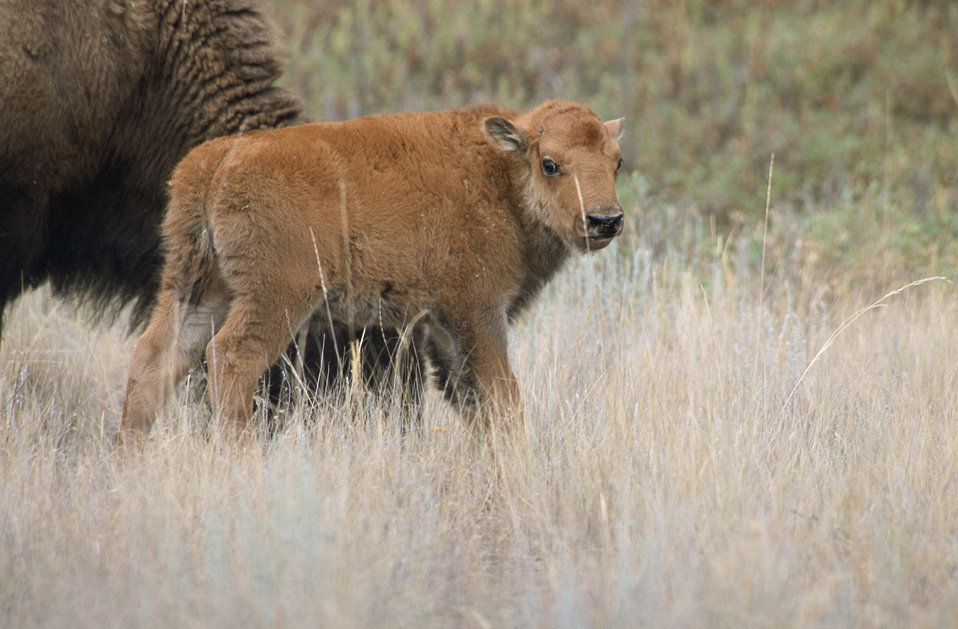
A bison calf in tall grass at the National Bison Range.